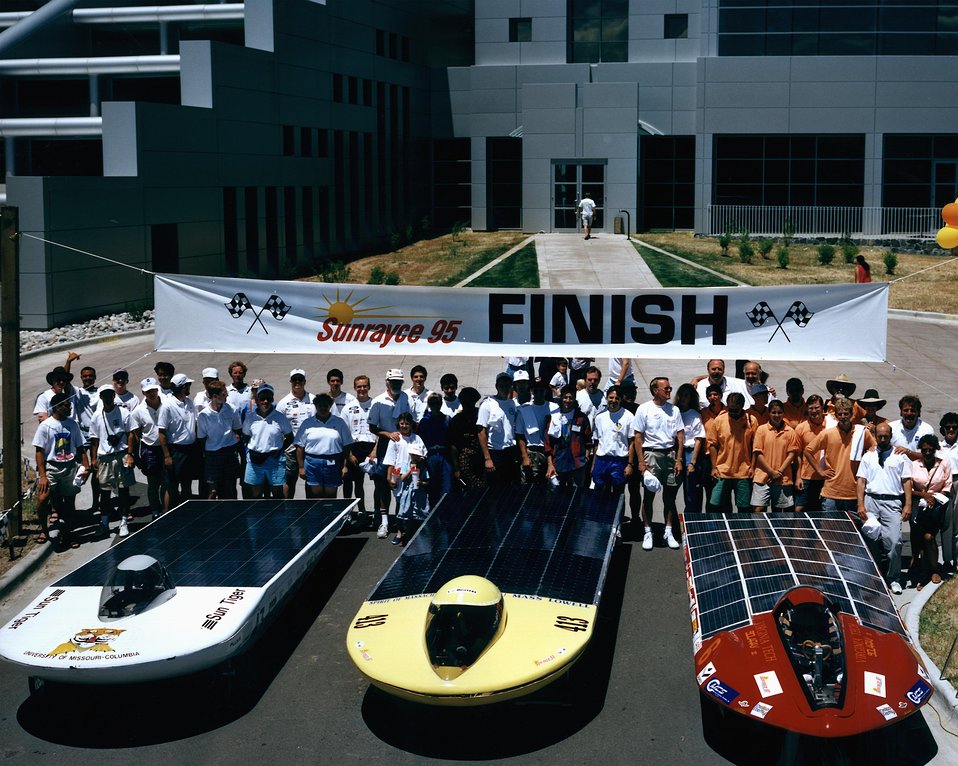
PARTICIPANTS IN TRIAL RUN FOR SUNRAYCE 1995.